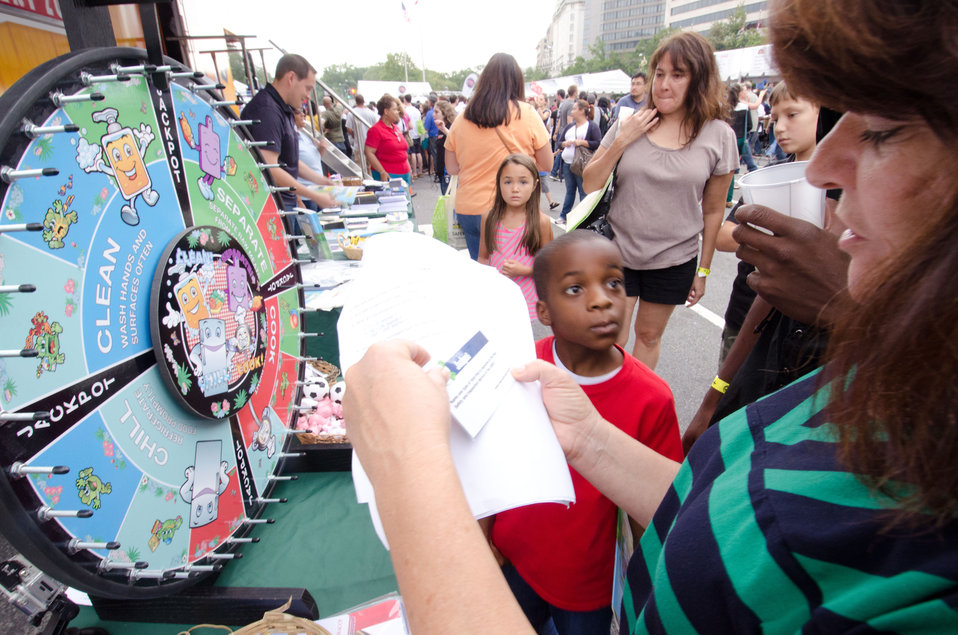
A visitor spun the wheel for a jackpot question and answered it correctly, allowing him to choose a digital thermometer for his dad to check the temperature of cooked meat; outside Agriculture’s mobile Discovery Zone at the Taste of D.C., event. Information materials that answer many every-day questions about maintaining safe food practices at home, additionally, games offered a fun way for children and parents to test their knowledge related to the four main principals of food safety – clean, separate, cook and chill. For more information see www.fsis.usda.gov/foodsafetymobile/
Taste of D.C., event that highlights more than 70 eateries, 30 specialty beer providers, the United Service Organization (USO) Metropolitan Washington, and live bands. It is anticipated that more than 500,000 people will attend over the course of the three-day event, which extends from the White House to the Capitol, along Pennsylvania Ave. in Washington D.C. on Saturday, October 6, 2012. Agriculture Food Safety and Inspection Service specialists present talks and cooking demonstrations.